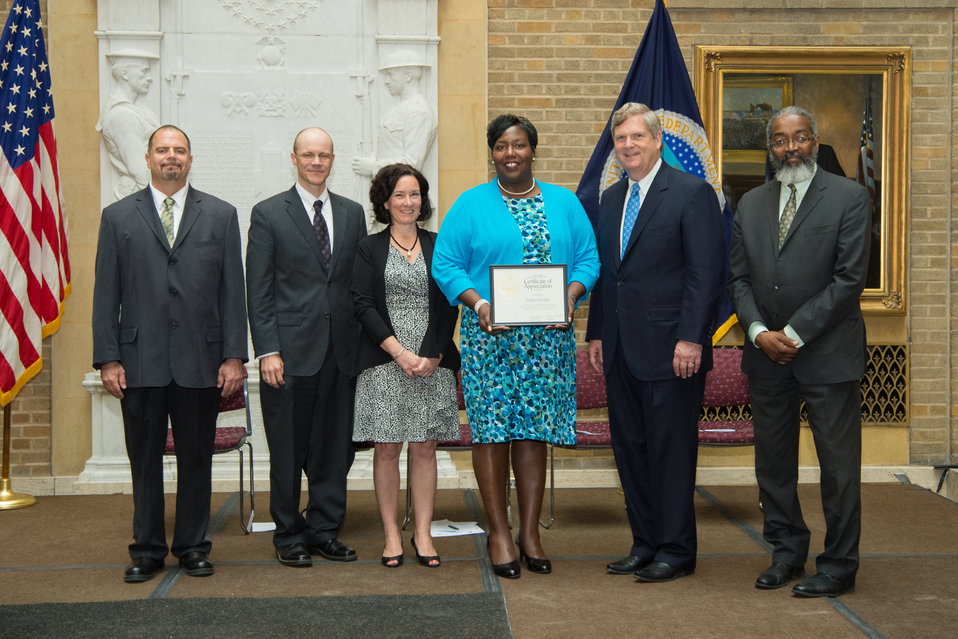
U.S. Department of Agriculture (USDA) Rural Development (RD) Mississippi Trina George receives the Unsung Hero Award from USDA’s Organization of Professional Employees President (OPEDA) Louis Iacoletti, USDA RD Deputy Under Secretary Doug O’Brien, Agriculture Secretary Tom Vilsack and USDA Assistant Secretary for Administration Dr. Gregory Parham at USDA in Washington, D.C. on Wednesday, May 7, 2014.